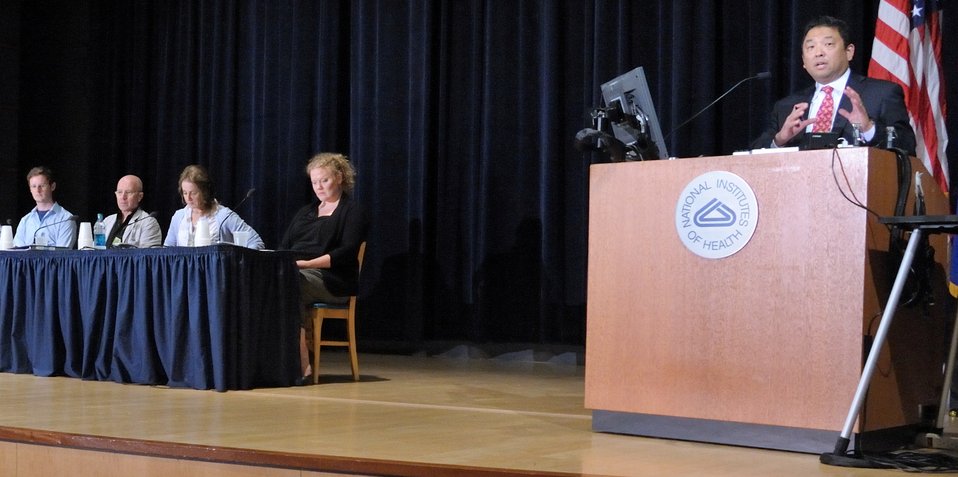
APP and Mineta - NIH Aug 2011

David Mineta (Deputy Director of Demand Reduction, White House Office of National Drug Control Policy) speaks at NIDA’s Addiction Performance Project, held Aug 5, 2011 on the NIH Campus